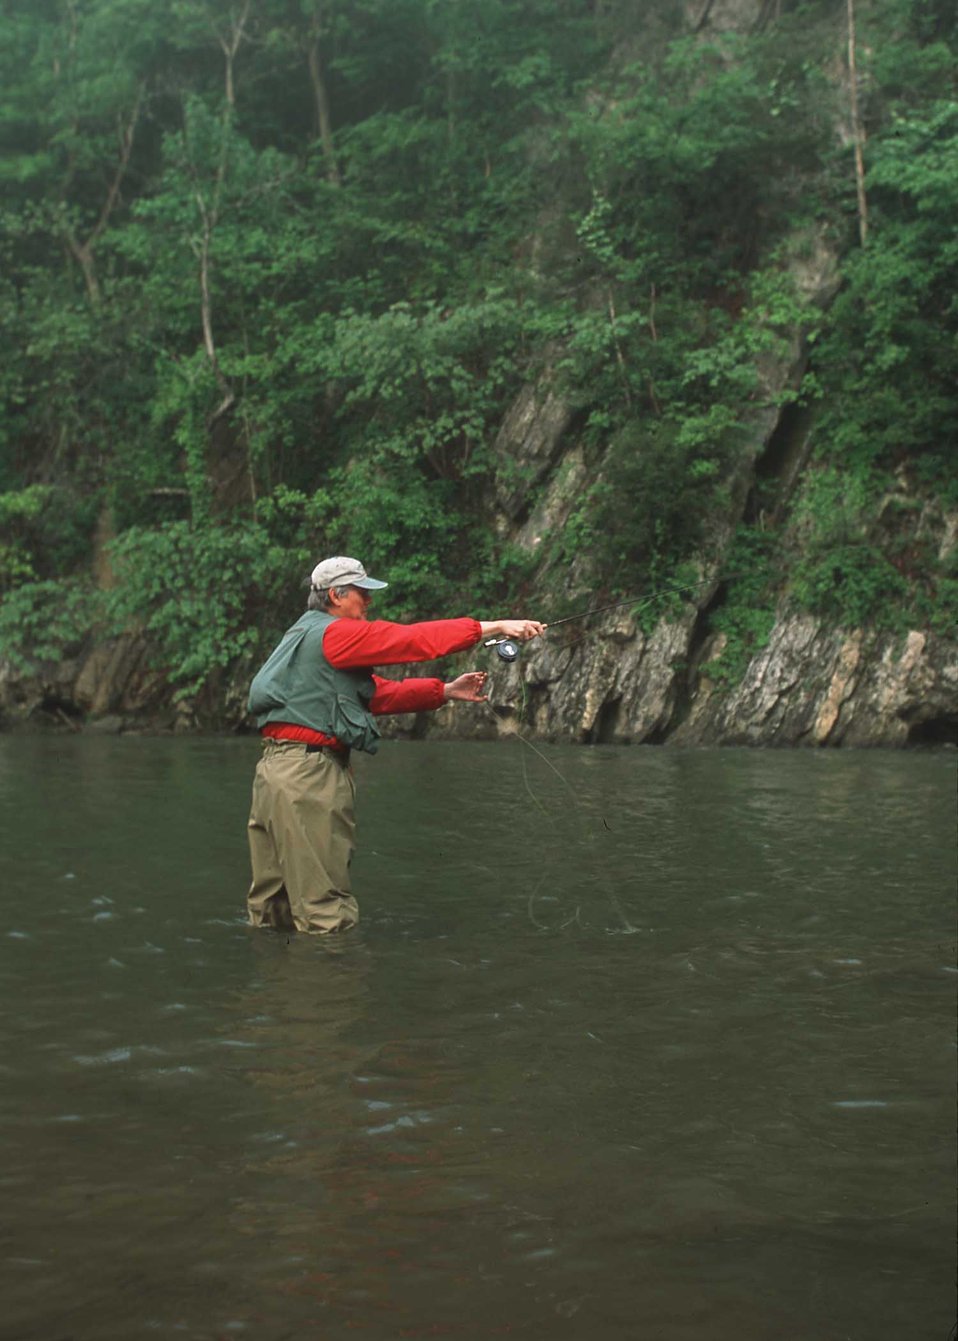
Fly fisherman on the South Fork of the Holston River. The river is one of the 10 Heritage rivers in the US. NRCS worked with local farmers and other agencies in providing buffers, fencing for livestock, roational grazing, tree planting and recreational opportunities while at the same time improving water quality and wildlife habitat.